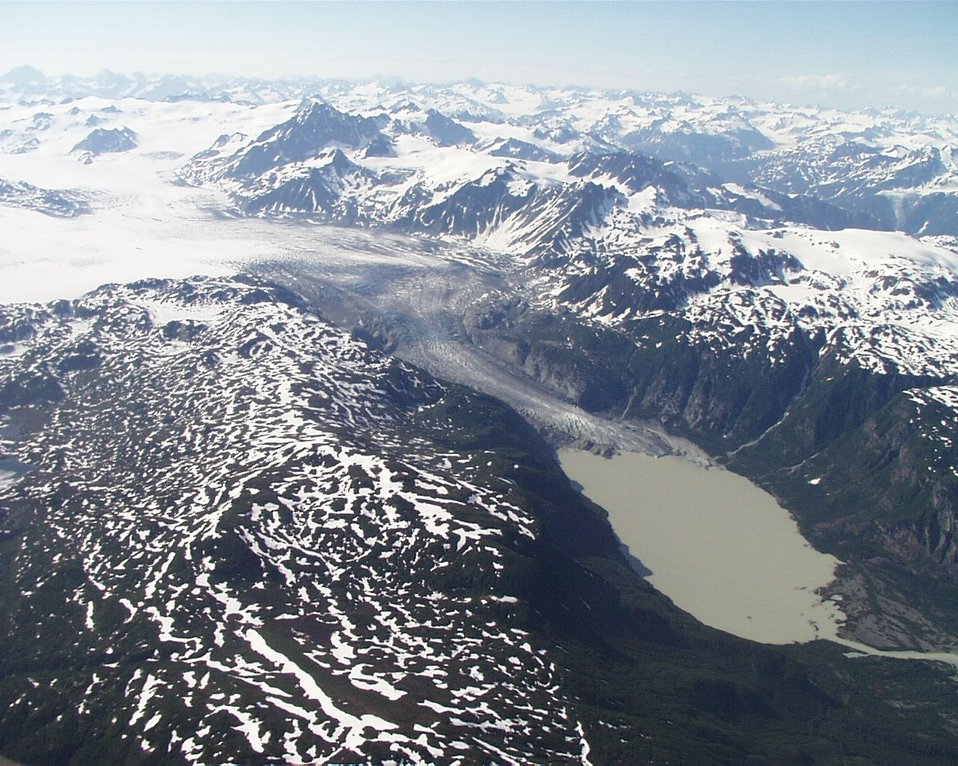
Aerial view of glacier and mountains. Glacier melting into terminal lake with river outflowing to righ